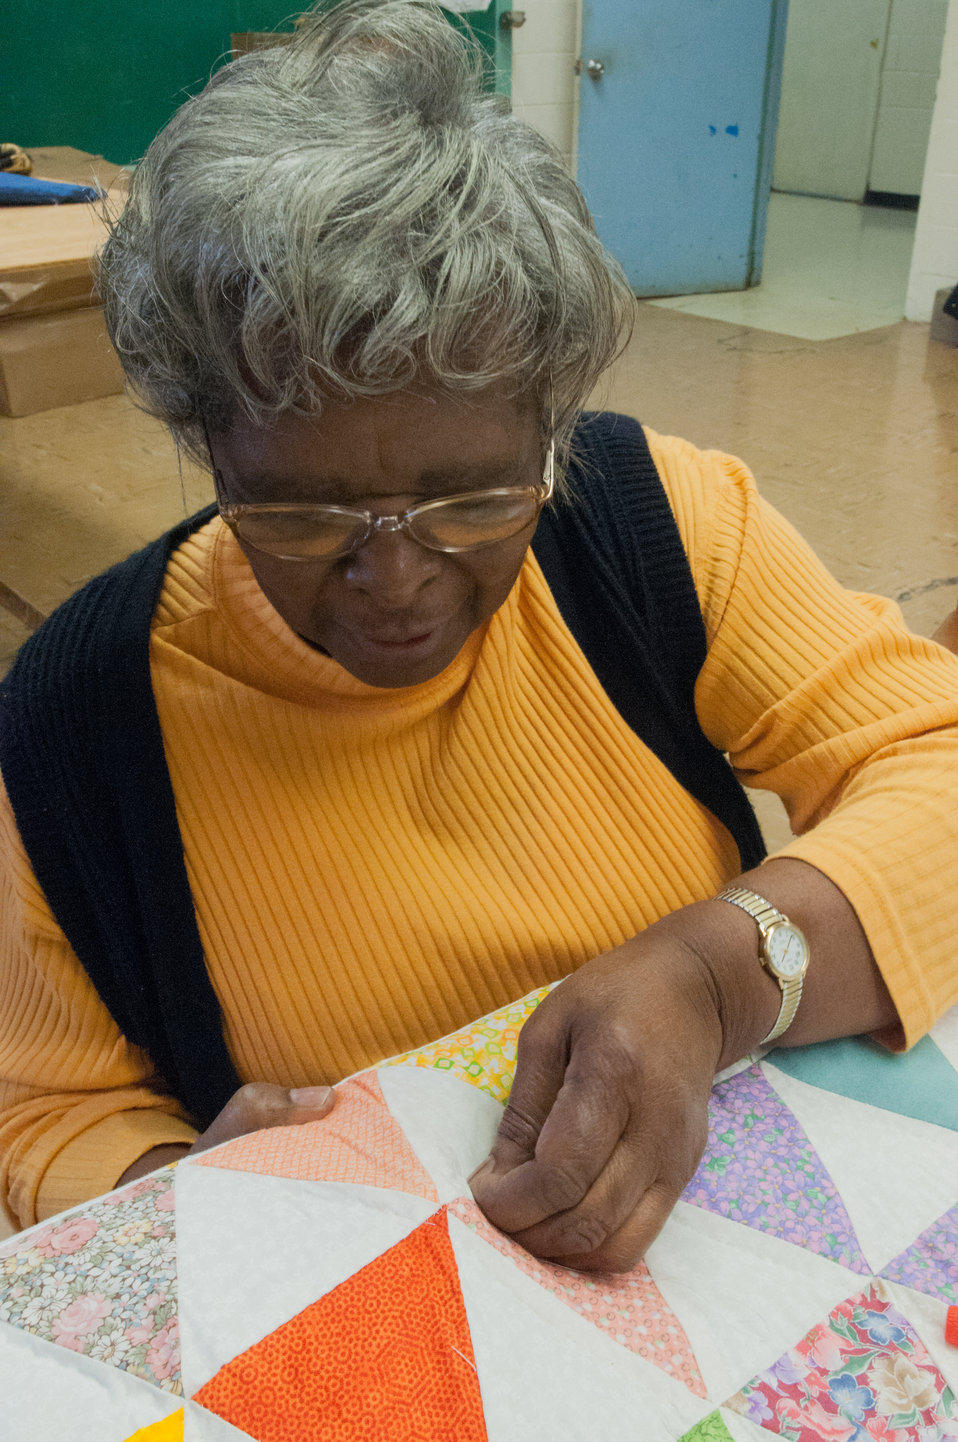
Mollie Hawkins works on a quilt for a King size bed at the East Baker Historical Society Community Center in Newton, Baker County, GA on Mar. 7, 2013. The East Baker Historical Society Community Center secured a U.S. Department of Agriculture (USDA) Rural Development (RD) Community Facilities (CF) Loan for the kitchen that enabled residents to prepare catered meals and to prepare and package food products. The USDA Strike Force Initiative has designated Baker County, GA as a Strike Force county selected to receive assistance to relieve persistent poverty in historically high-poverty counties.